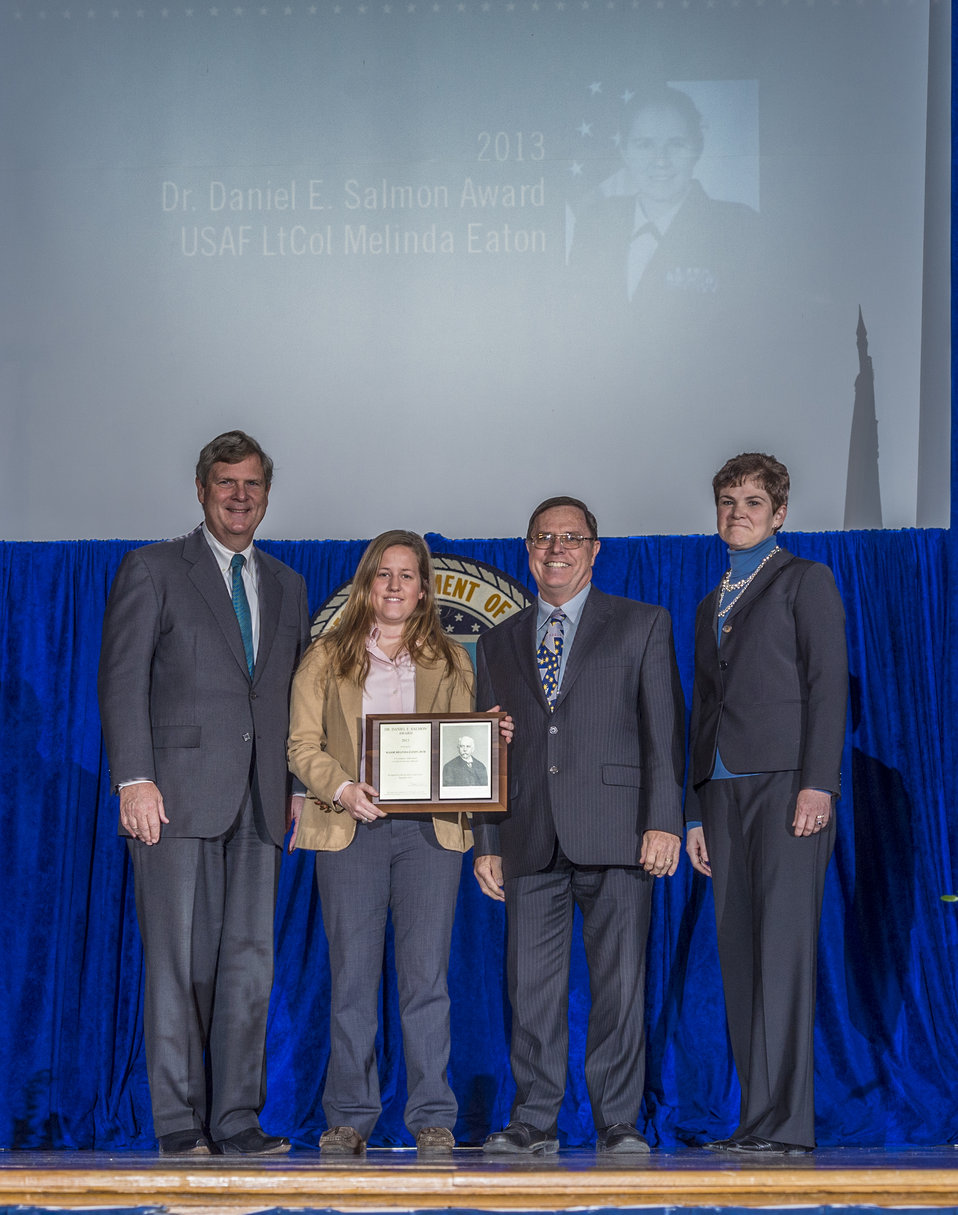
Agriculture Secretary Tom Vilsack and Agriculture Deputy Secretary Krysta Harden present The Dr. Daniel E. Salmon Award to Lieutenant Colonel Melinda Eaton, USAF, (accepting Caroline Tuckhorn and Dr. Michael Gilsford) for outstanding contributions and notable service in the public's interest by a federally employed veterinarian who has no more than 10 years of service at the 2013 Secretary's Honor Awards in the Jefferson Auditorium at the U.S. Department of Agriculture (USDA) in Washington, D.C. on Wednesday, Dec. 11, 2013. This award was established in 1985 to honor the first director of the U.S. Department of Agriculture's Bureau of Animal Industry and is sponsored annually by the National Association of Federal Veterinarians.